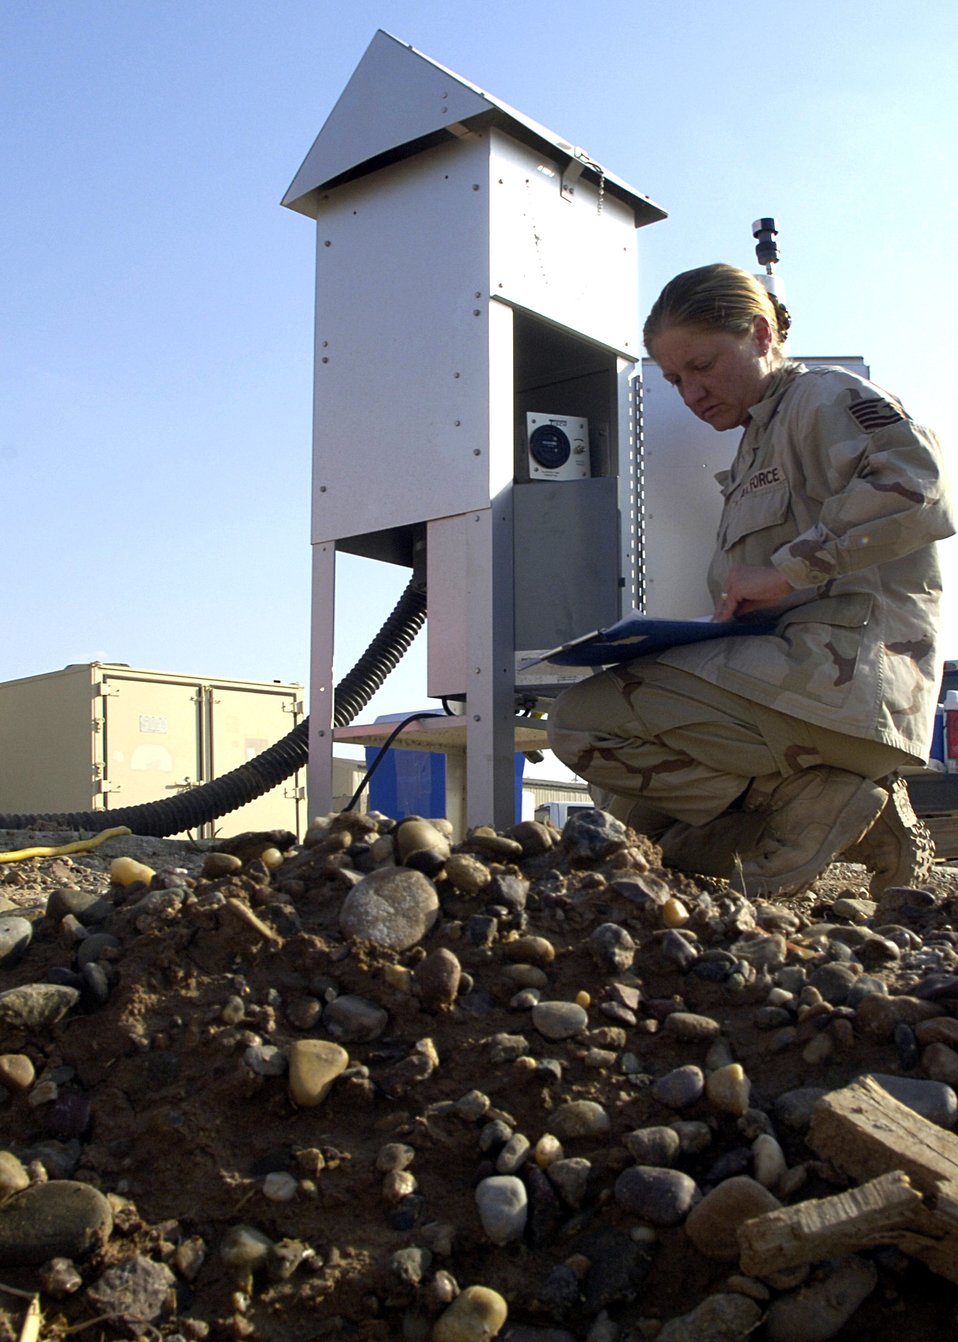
Bioenvironmental engineers keep Airmen safe

Tech. Sgt. Melissa Saraiva checks a monitoring device April 13 at Balad Air Base, Iraq, for common pesticides and other environmental hazardous chemicals in the air. Sergeant Saraiva is the bioenvironmental engineer flight NCOIC. Bioenvironmental engineers perform environmental, occupational and radiological surveillance in order to protect and maintain a healthy work force, and they serve as mission enhancers during emergency management response operations.